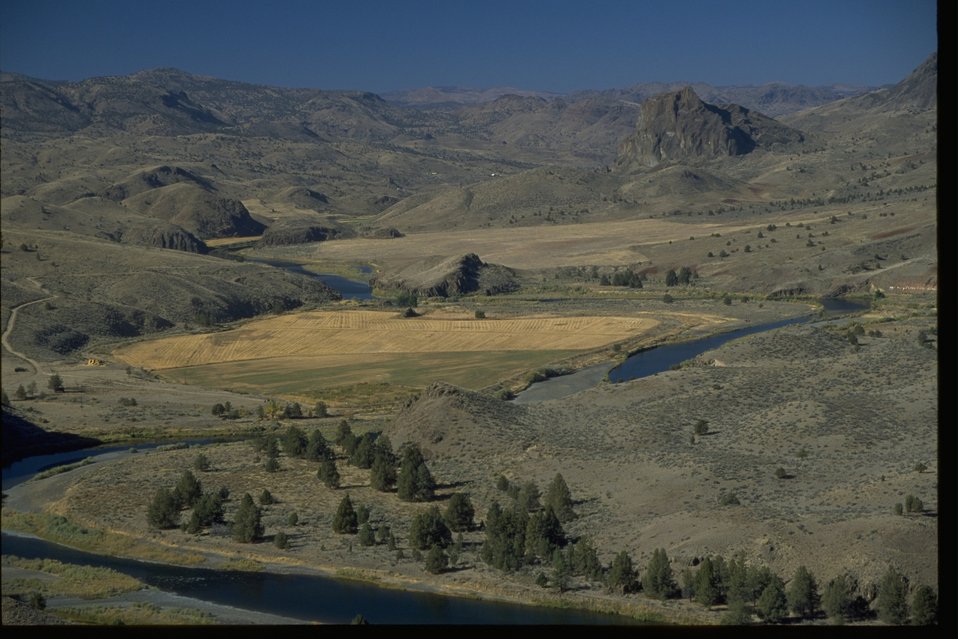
Bridge Creek agricultural fields from ridge.